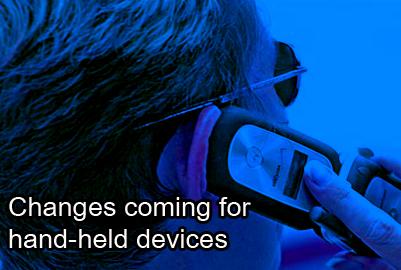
Changes coming